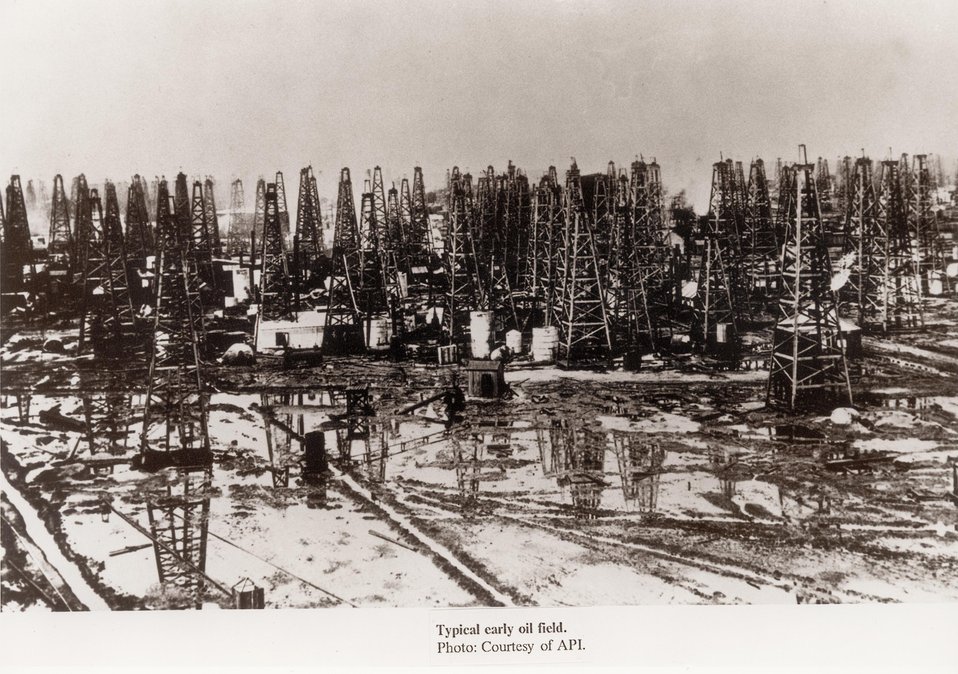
Typical early oil field